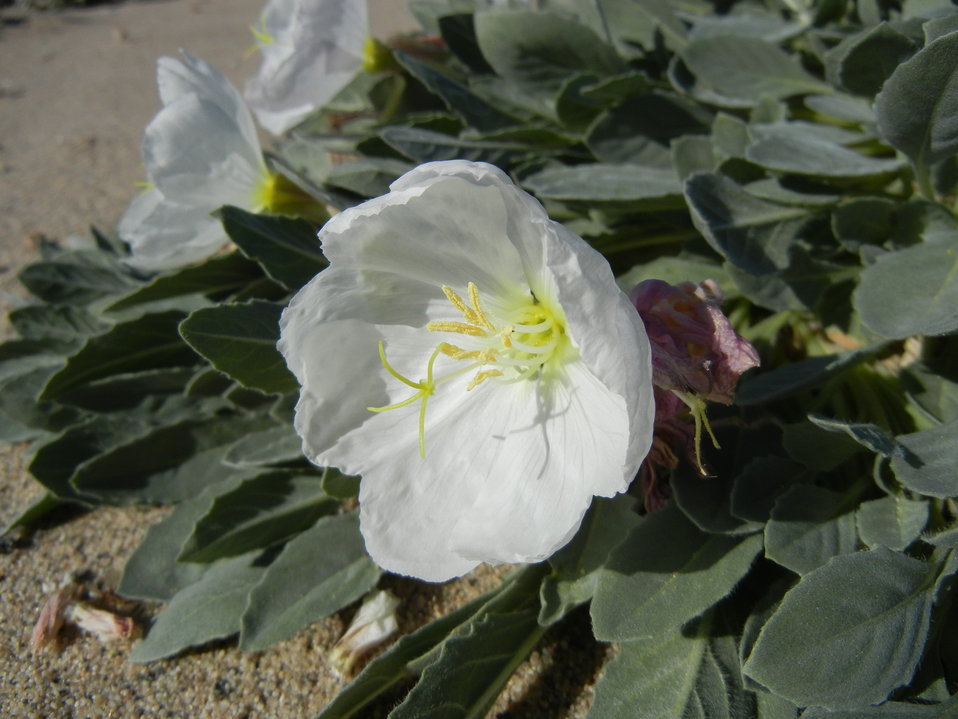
Eureka Valley evening-primrose (Oenothera californica [avita] subsp. eurekensis), is restricted to the dune systems of the Eureka Valley in Death Valley National Park, California.